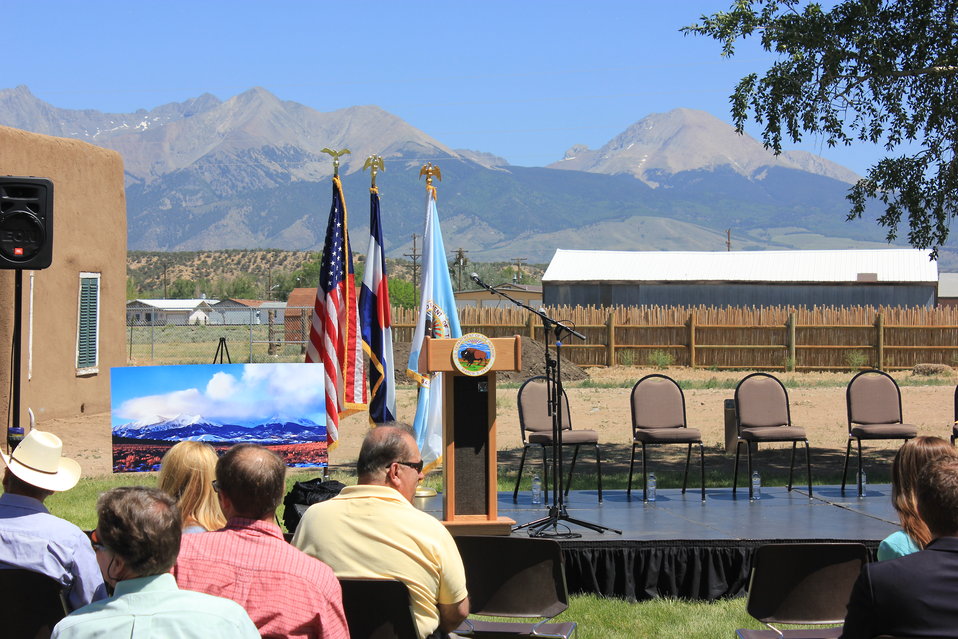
Historic Conservation Easement in Sangre de Cristo Mountains